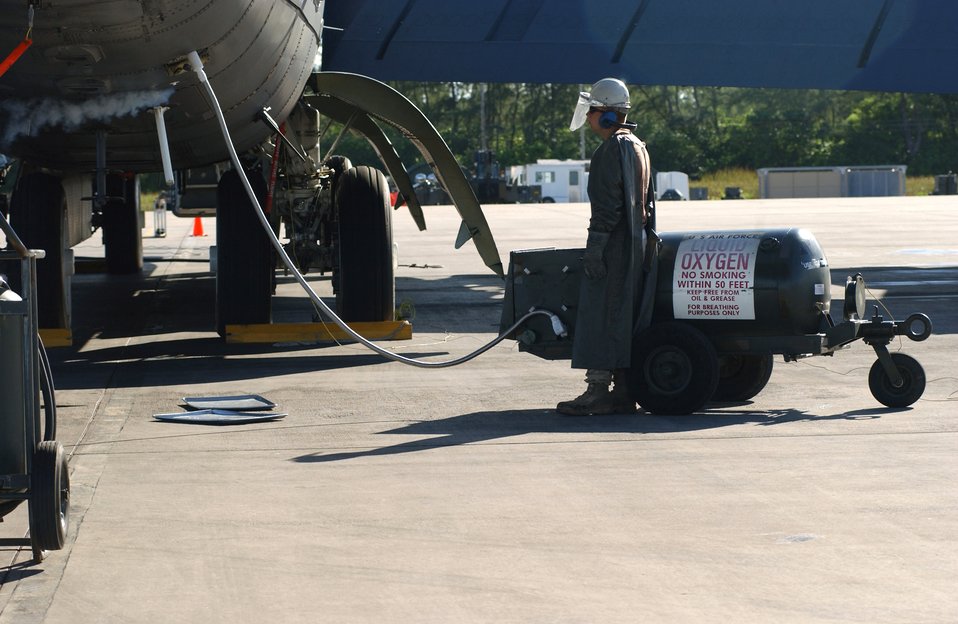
A chemical effect

OPERATION ENDURING FREEDOM -- Airman 1st Class Nathan Jacobson performs liquid oxygen service to a B-52 Stratofortress at a forward-deployed location May 16 in preparation for a sortie supporting operations Iraqi Freedom and Enduring Freedom. He is a crew chief assigned to the 40th Expeditionary Maintenance Squadron.